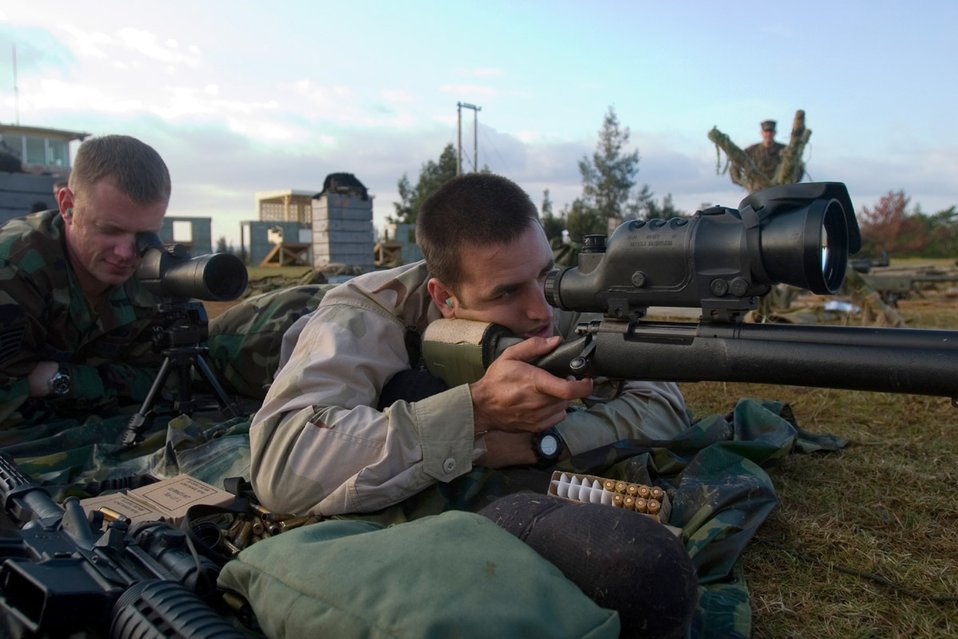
Airmen return from Urban Sniper School

Staff Sgt. Samuel Howell (spotter) and Staff Sgt. Patrick Pendergest (sniper) train at the Urban Sniper School in January at Kadena Air Base, Japan. They were the first two Airmen to attend Kadena AB?s Marine sniper school. They both are from the 736th Security Forces Squadron from Andersen Air Force Base, Guam.